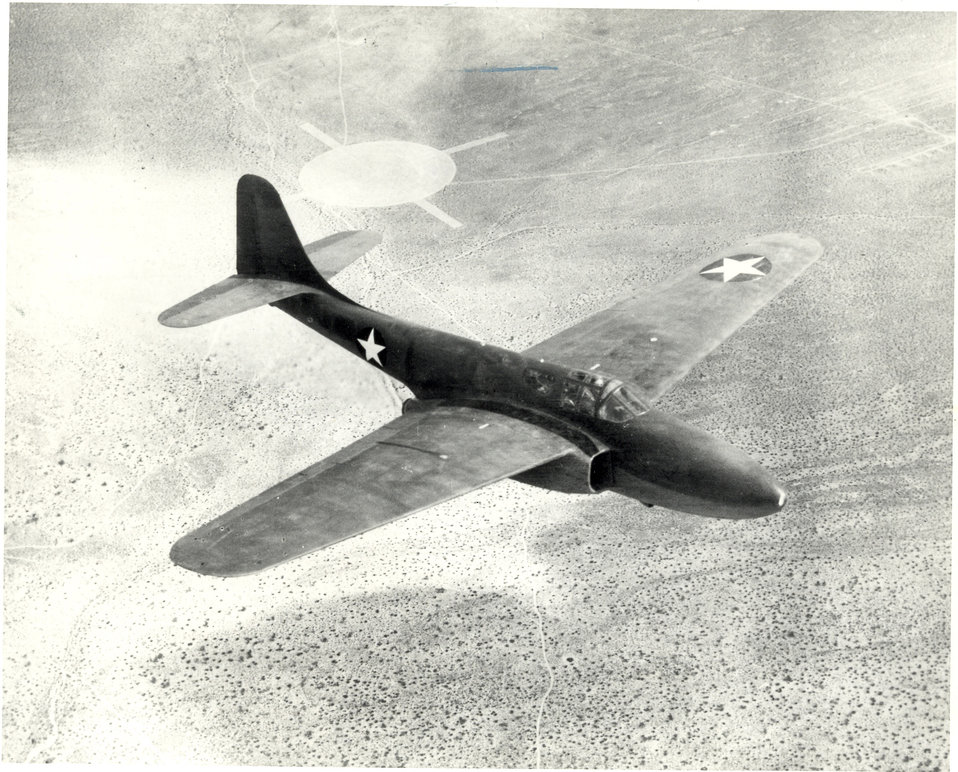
Bell XP-59

The Bell XP-59 flies a test mission. The aircraft was America's first jet-powered aircraft, and made its maiden flight on Oct. 1, 1942.